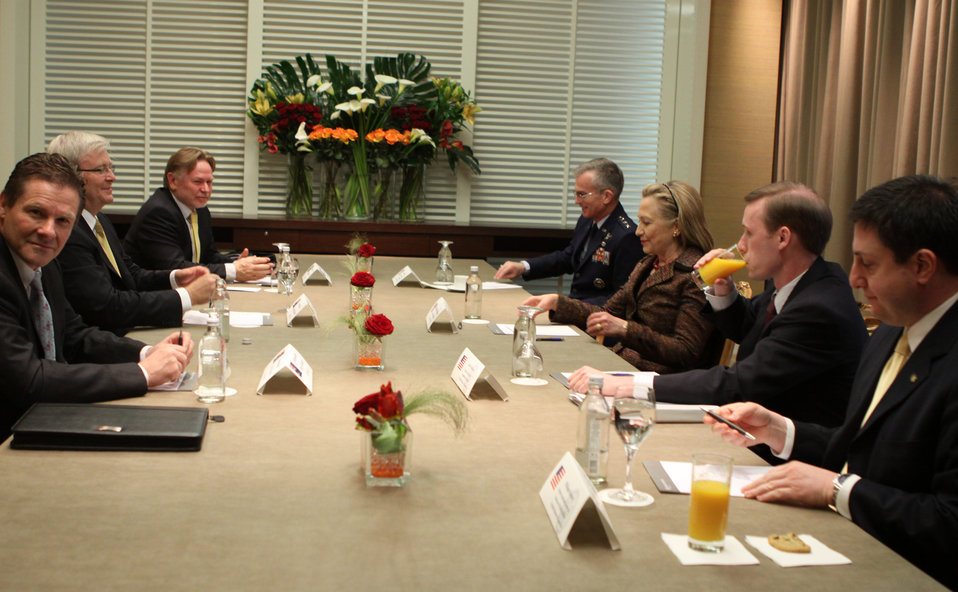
Secretary Clinton Holds a Bilateral Meeting With Australian Foreign Minister Rudd

U.S. Secretary of State Hillary Rodham Clinton meets with Australian Foreign Minister Kevin Michael Rudd at the Hotel Intercontinental in Geneva, Switzerland, on February 28, 2011. The meeting took place on the side of the February 28 High Level Segment of the Human Rights Council.